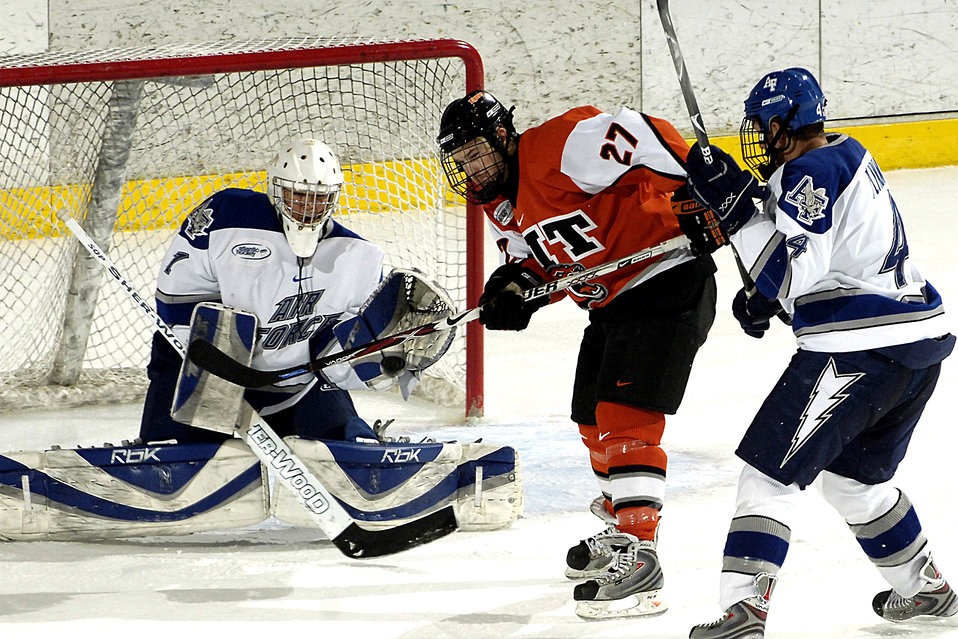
Falcons defeaft Rochester Institute of Technology

U.S. Air Force Academy Falcon sophomore goalie Andrew Volkening and junior defenseman Greg Flynn combine for the save as the Air Force defeated Rochester Institute of Technology, 5-2, in an Atlantic Hockey Association game Jan. 11 in the Cadet Ice Arena at Colorado Springs, Colo.